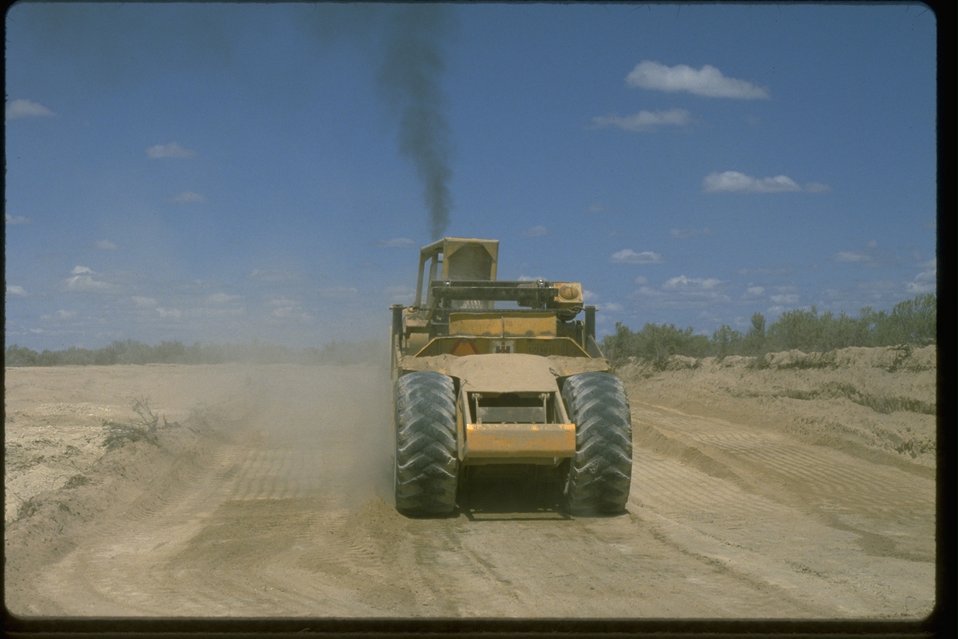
Large equipment mining diatomite.